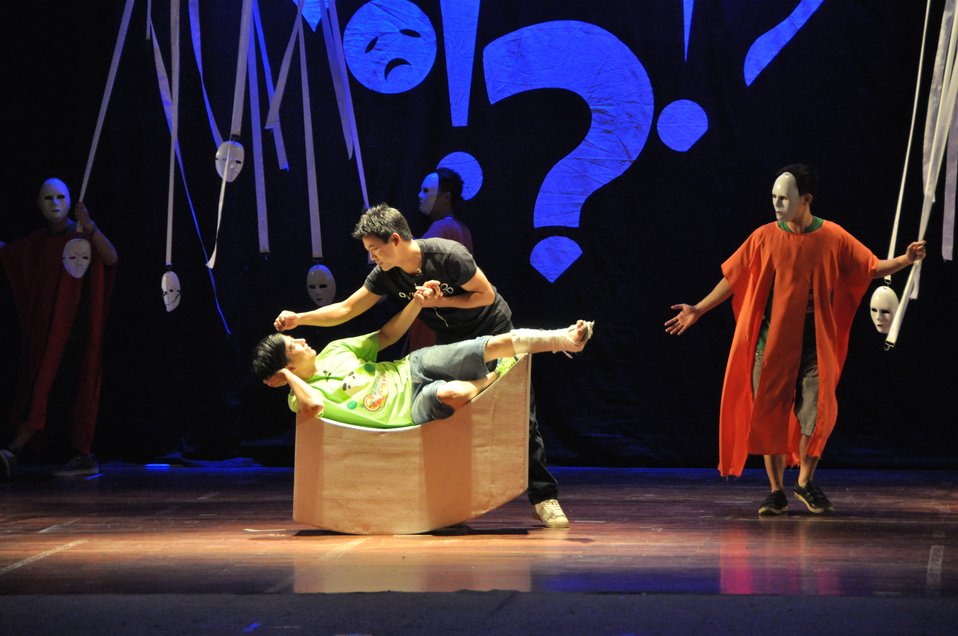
PEPFAR Musical Questions and Exclamations

Hanoi, May 17, 2013